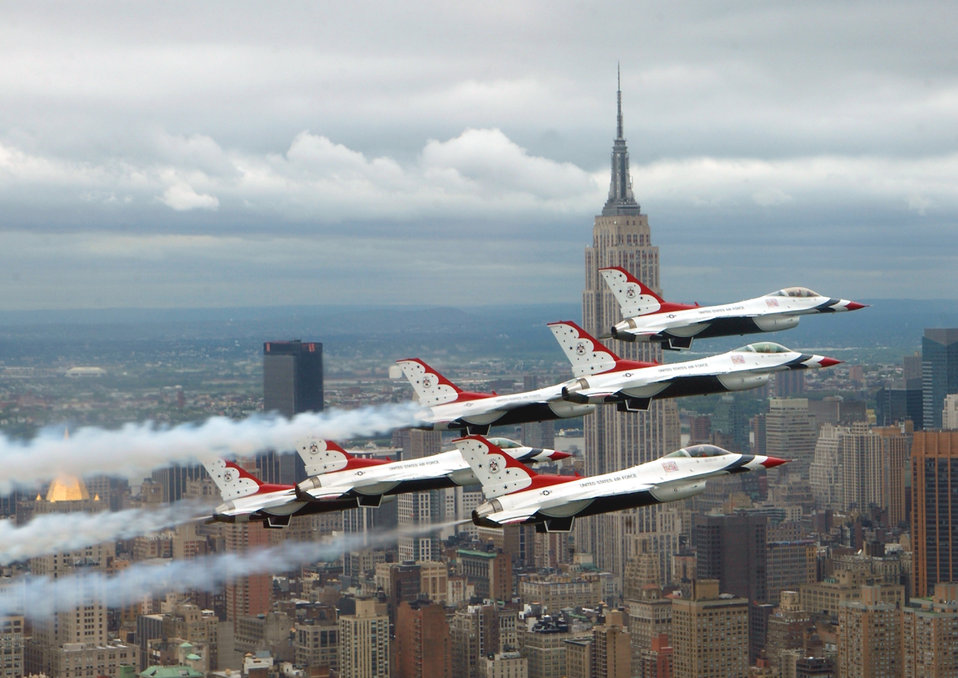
They love New York

NEW YORK -- Six F-16 Fighting Falcons with the U.S. Air Force Thunderbirds aerial demonstration team fly in delta formation in front of the Empire State Building during an air show May 26.